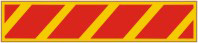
Air Force releases combat action medal criteria

The Air Force combat action medal lapel ribbon.